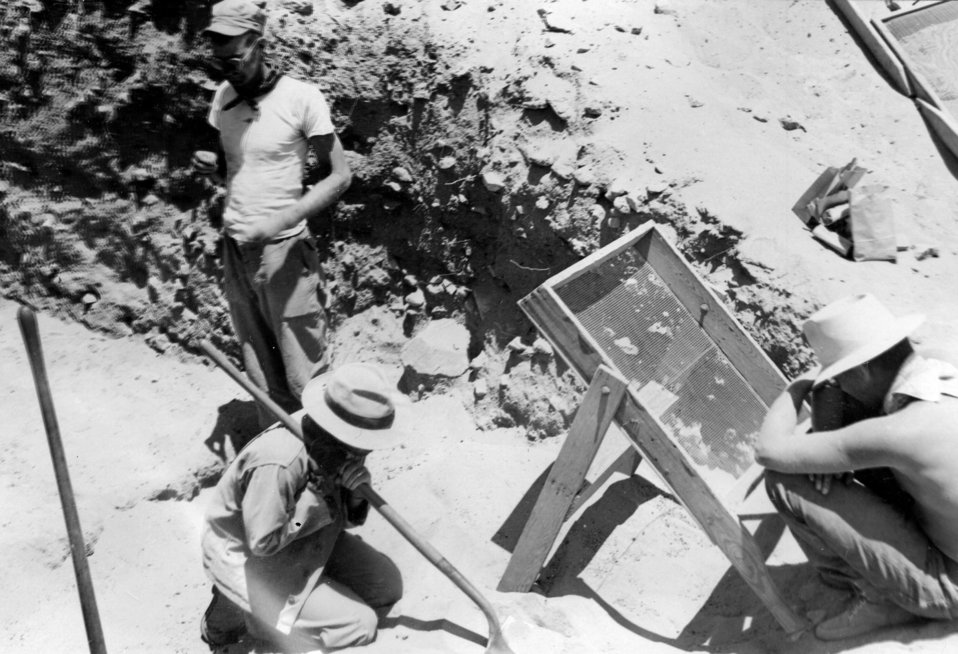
J.E. Smith, F.J.Clune and D. Biernoff resting after screening at Rose Spring.